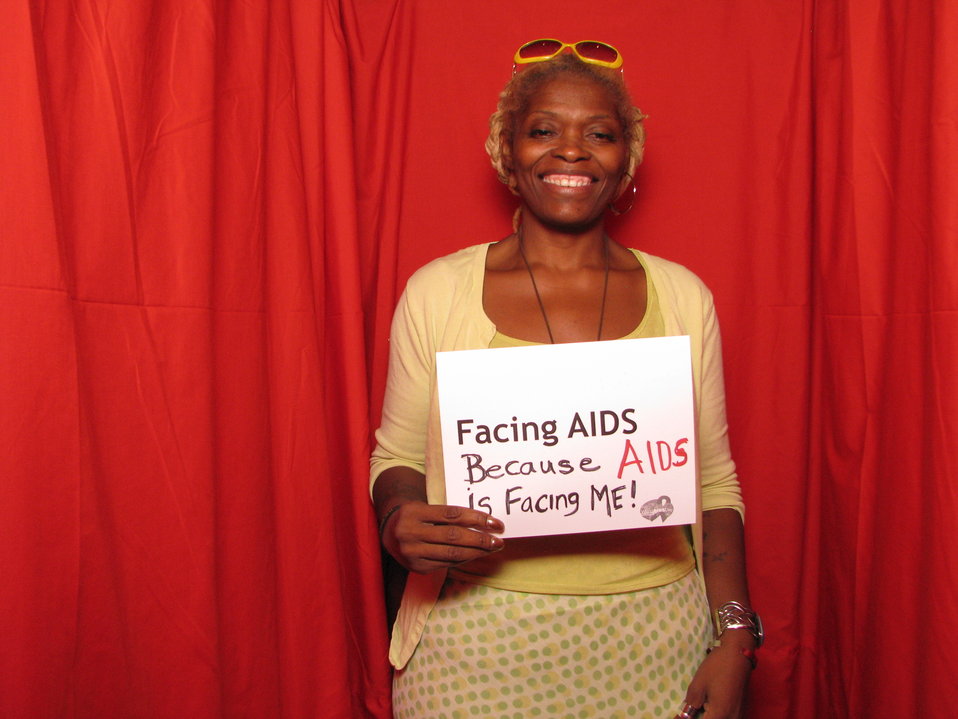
FACING AIDS because AIDS is Facing ME!

From the AIDS.gov photo booth at the U.S. Conference on AIDS, September 2010 (Orlando, FL).